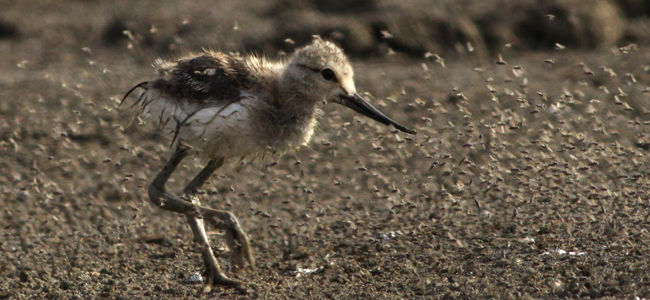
American Avocet chick at San Diego NWR